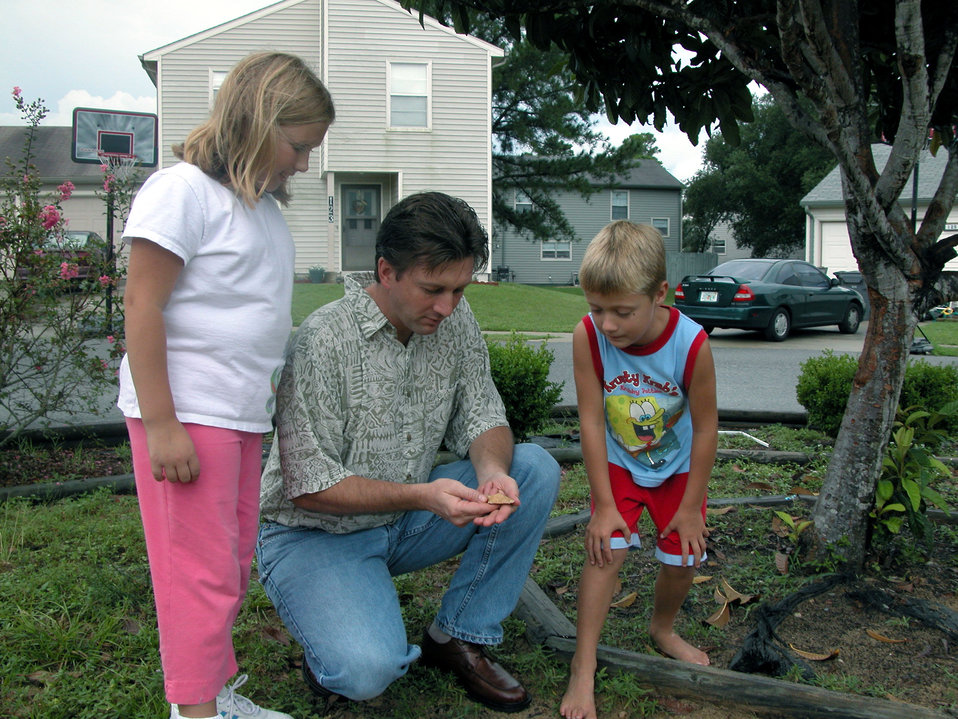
Boy discovers arrowhead

EGLIN AIR FORCE BASE, Eglin -- Ten-year-old Nancy Lilley and her 6-year-old brother, John David, listen carefully as Mark Stanley explains the significance of the arrowhead the two children found in their cul-de-sac in base housing here. Mr. Stanley is an archaeologist with the environmental program directorate.